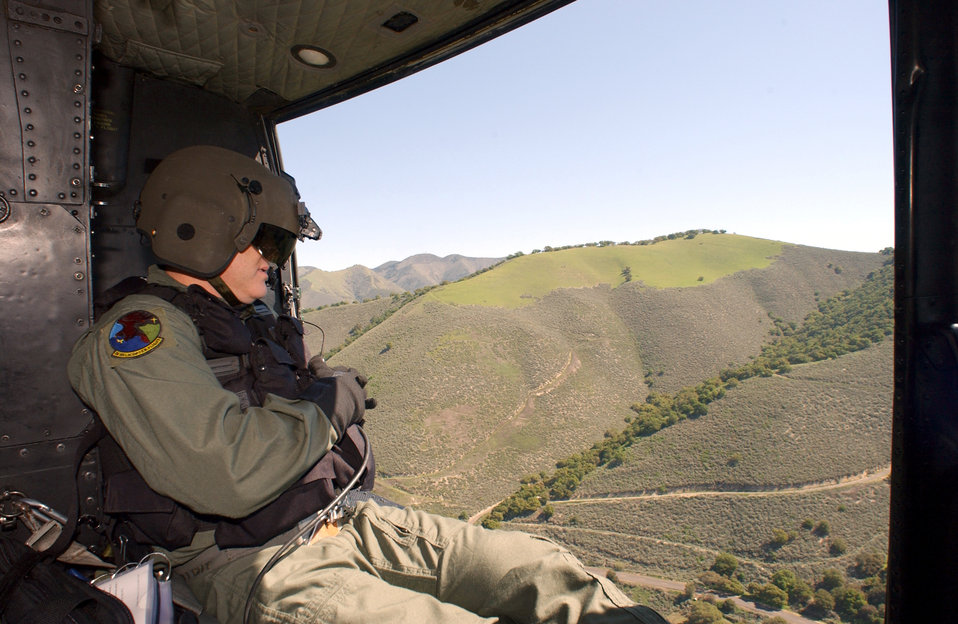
Surveying terrain

OVER LOS PADRES NATIONAL FOREST, Calif. -- Tech. Sgt. Wesley Simpson scans the terrain here for any potential hazards during a routine low-level survey. He is a flight engineer for the 76th Helicopter Flight at nearby Vandenberg Air Force Base.